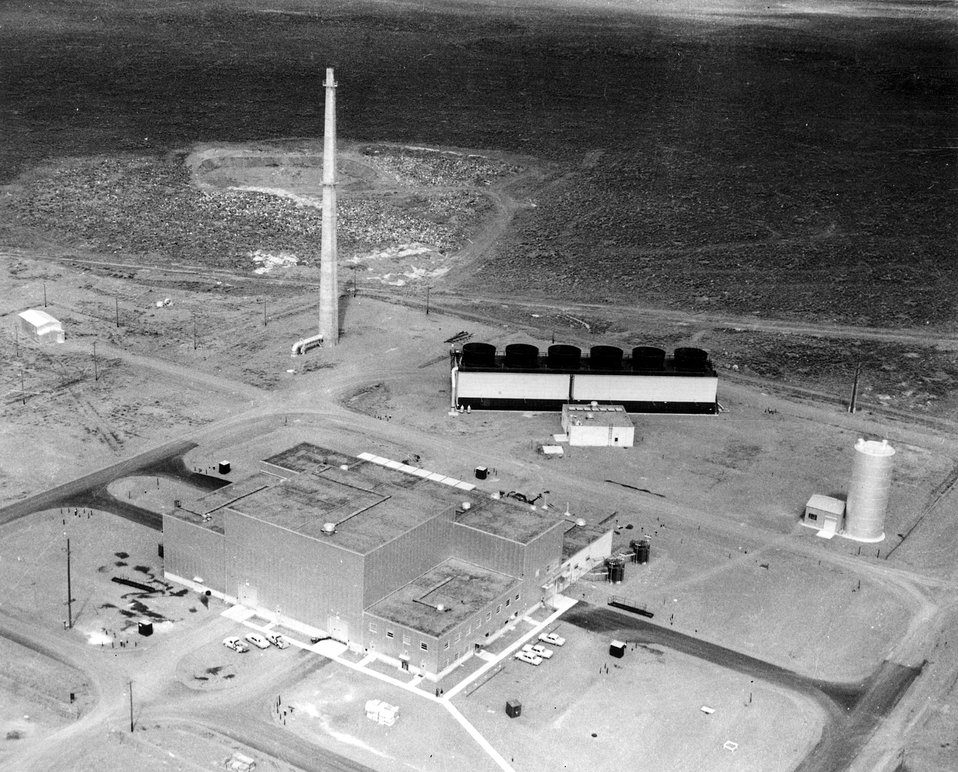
Aerial view of the Advanced Test Reactor building coolant tower and stack at the U.S. Atomic Energy Commission's National Reactor Testing Station in Idaho. Circa 1974.